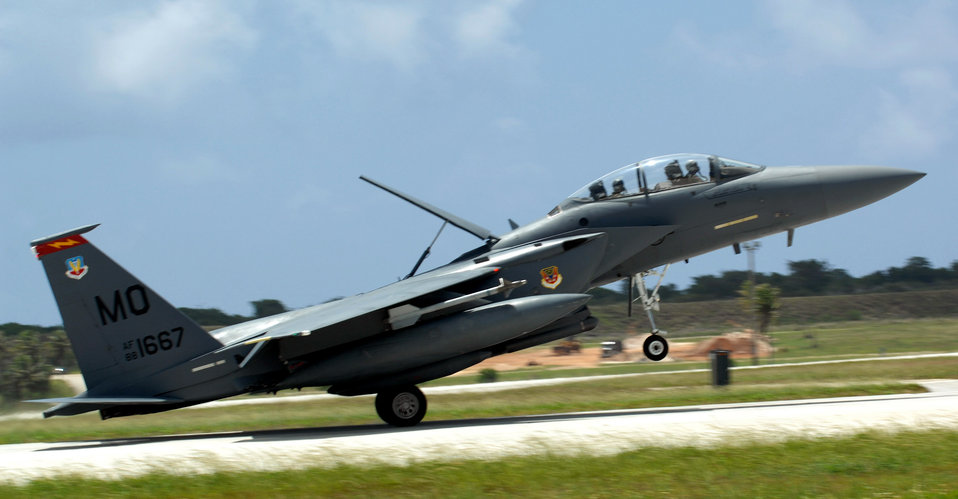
Strike Eagles roar above the Pacific

An F-15E Strike Eagle touches down on the flightline June 4 at Andersen Air Force Base, Guam. A total of 12 F-15s deployed from Mountain Home Air Force Base, Idaho, for a four-month tour to Andersen AFB. Flying in the Pacific region will allow the unit a chance to train in maritime interdiction missions.